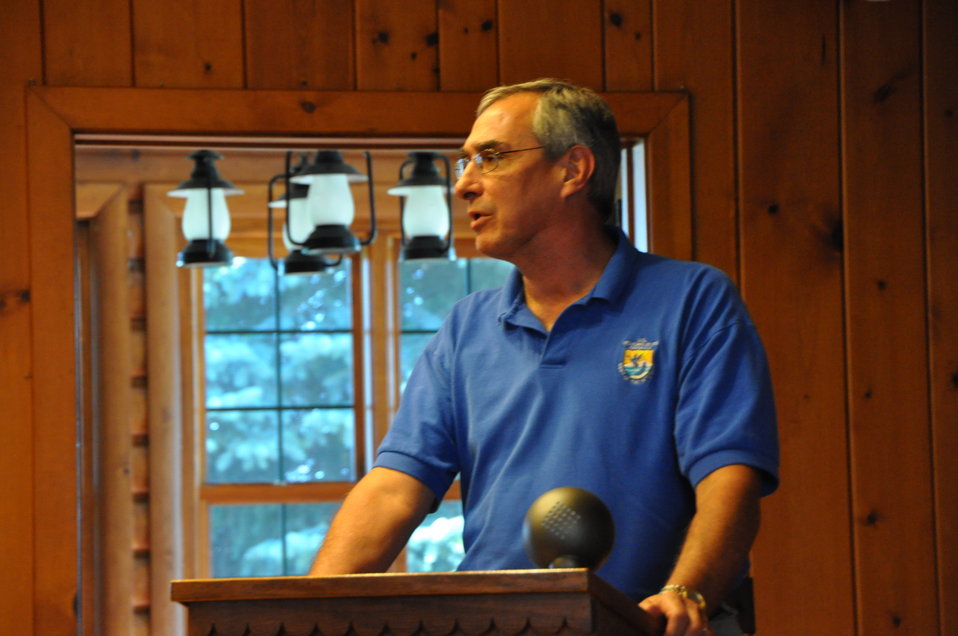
Regional Direction Tom Melius

Regional Director Tom Melius addresses members of the conservation community at Federal Premium Ammunition's 90th anniversary reception.